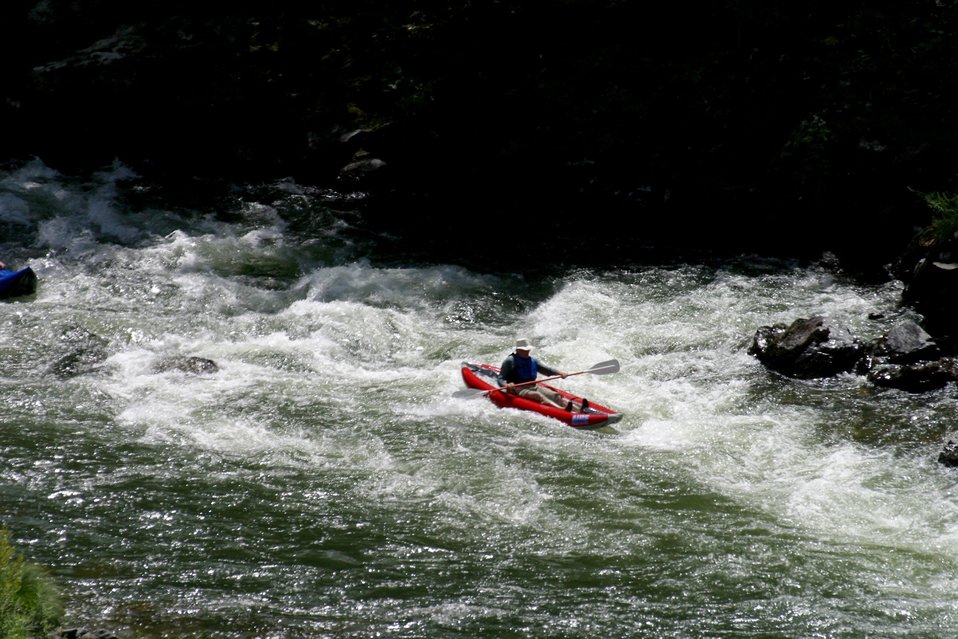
Boater at Grave Creek Falls